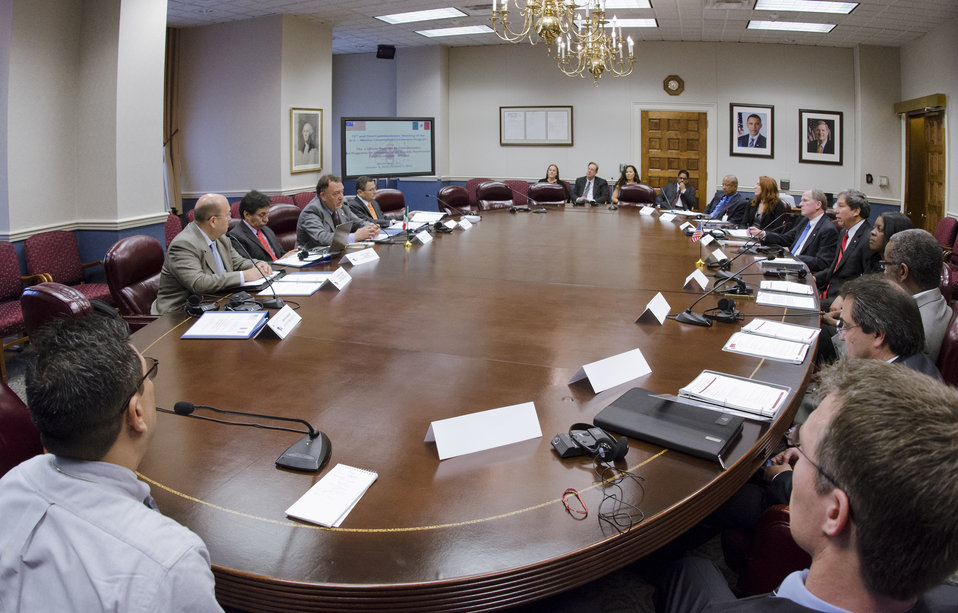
The U.S. Department of Agriculture’s (USDA) 73rd and Final Commissioners Meeting of the U.S. – Mexico Cooperative Screwworm Program meets in the Williamsburg room at USDA in Washington, D.C. on Oct. 5, 2012.